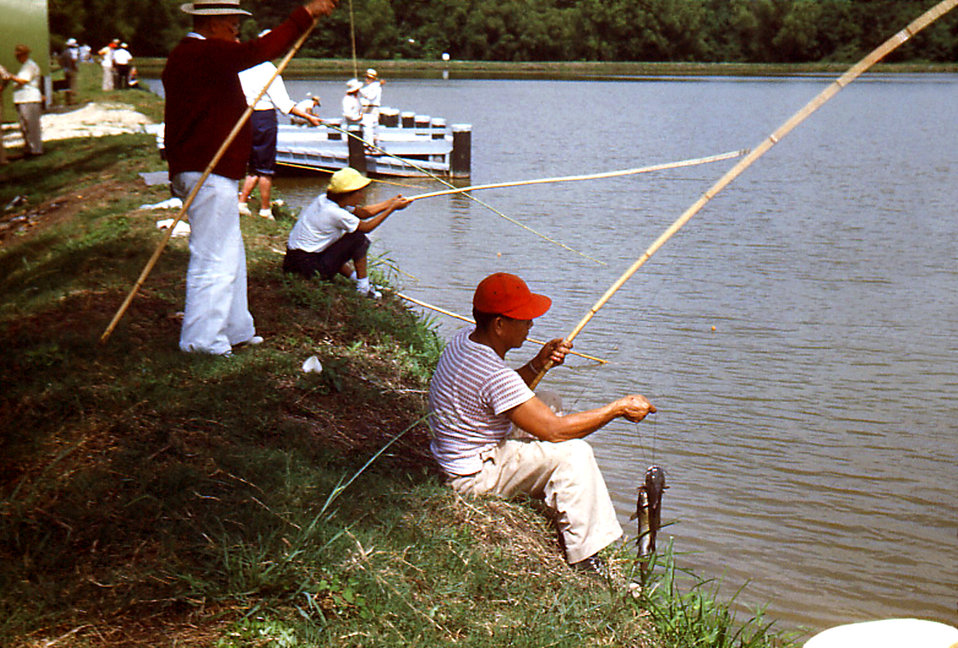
Depicted in this historic image was a group of Carville Leprosarium patients as they were fishing on the banks of Lake Johansen, where when weather permitted, fishing was an almost daily ritual. Sometimes snakes would join those fishing with their cane poles. Lake Johansen was named after one of the Leprosarium's Chief Medical Ofiicers, Dr. Frederick A. Johansen. Being that the patients were for the most part quarantined, and therefore, sequestered from the surrounding society, participation in outdoor activities such as this fishing trip were well attended, and enjoyed by all.